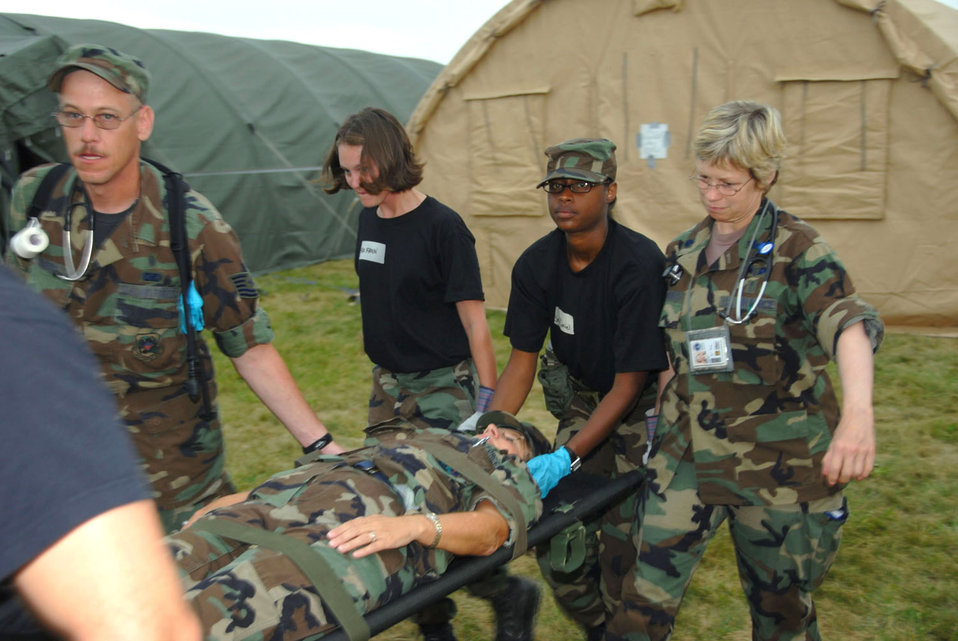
Guard, Reserve medics gear up at Patriot '06

Medics carry a simulated patient on a litter during their certification training on the Expeditionary Medical Support System during Patriot '06 at Ft. McCoy, Wisc.